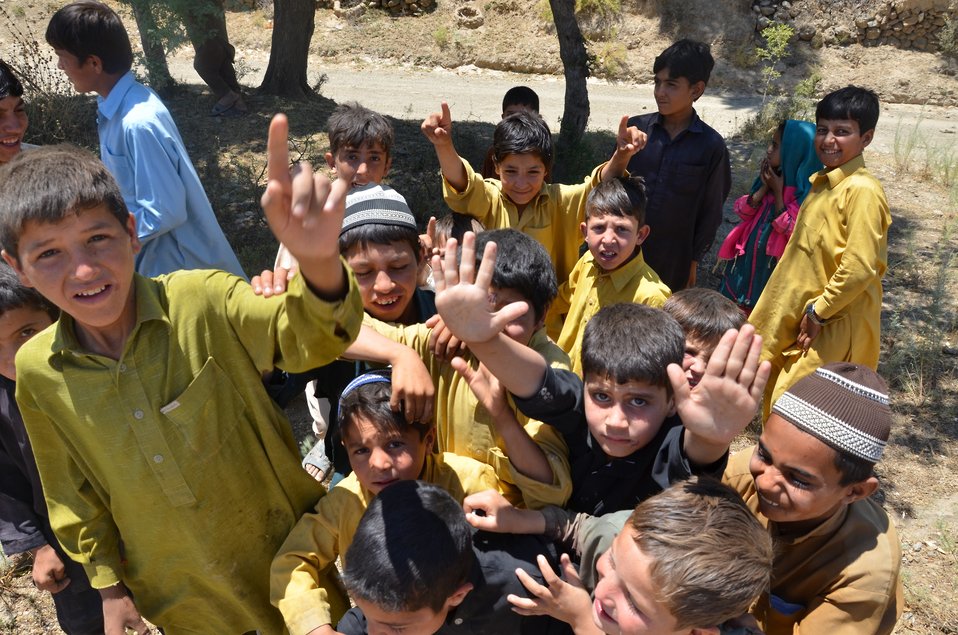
Children gathererd at the site of MHU camp (Imam Baig Mohmand Agency)

Mobile Health Unit (Purchased and fabricated wit financial support from USAID) are providing basic health services in the remote areas